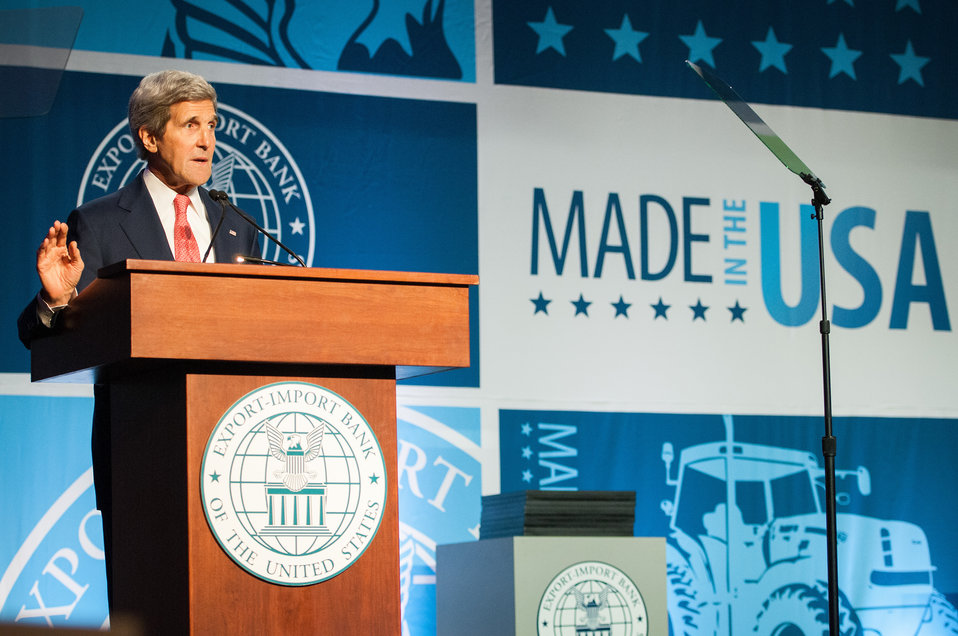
Secretary Kerry Delivers Remarks at the Export-Import Bank Annual Conference

U.S. Secretary of State John Kerry delivers remarks at the Export-Import Bank Annual Conference in Washington, D.C., on April 24, 2014.